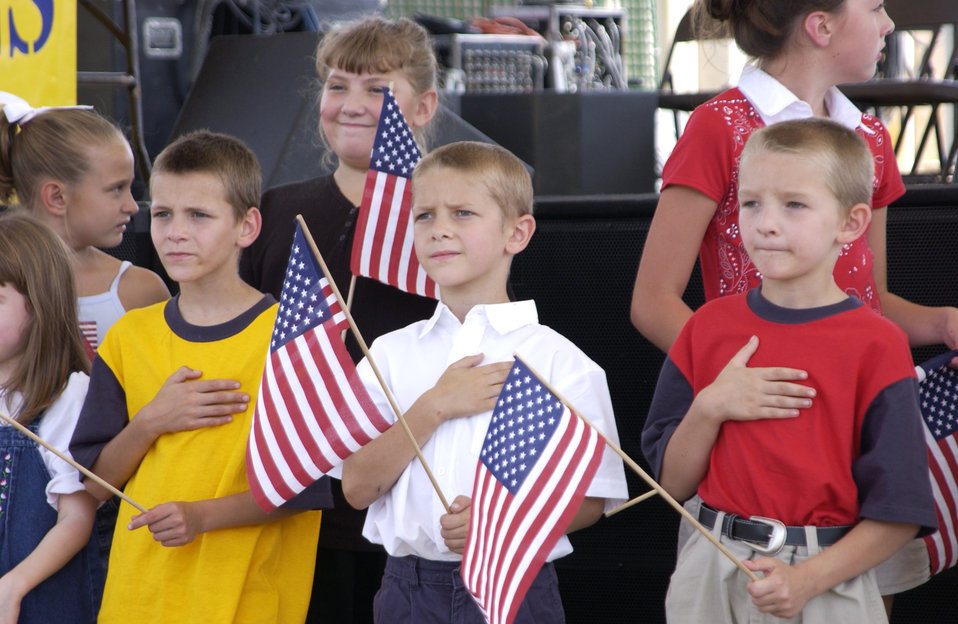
Pledge of Allegiance

PEORIA, Ill. -- Children of military personnel in the area lead the audience in the Pledge of Allegiance during the opening of Operation Enduring Families held on the Peoria Riverfront Sept. 11. Operation Enduring Families was a showcase event to commemorate military members and the victims of the Sept. 11, 2001 attacks.